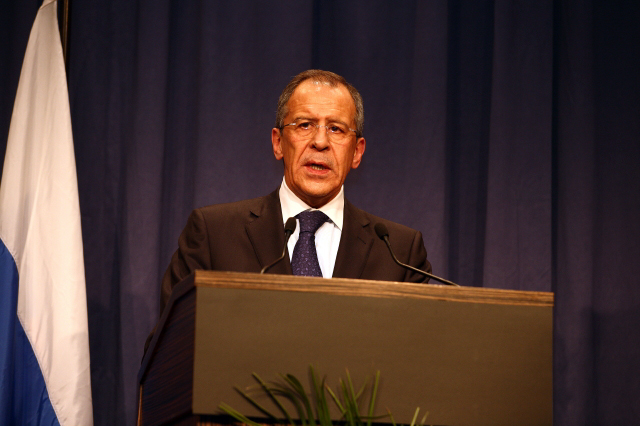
Press Conference With Russian Foreign Minister

Press conference after dinner meeting between U.S. Secretary of State Hillary Rodham Clinton and Russian Foreign Minister Sergey Lavrov in Geneva, Switzerland March 6, 2009.